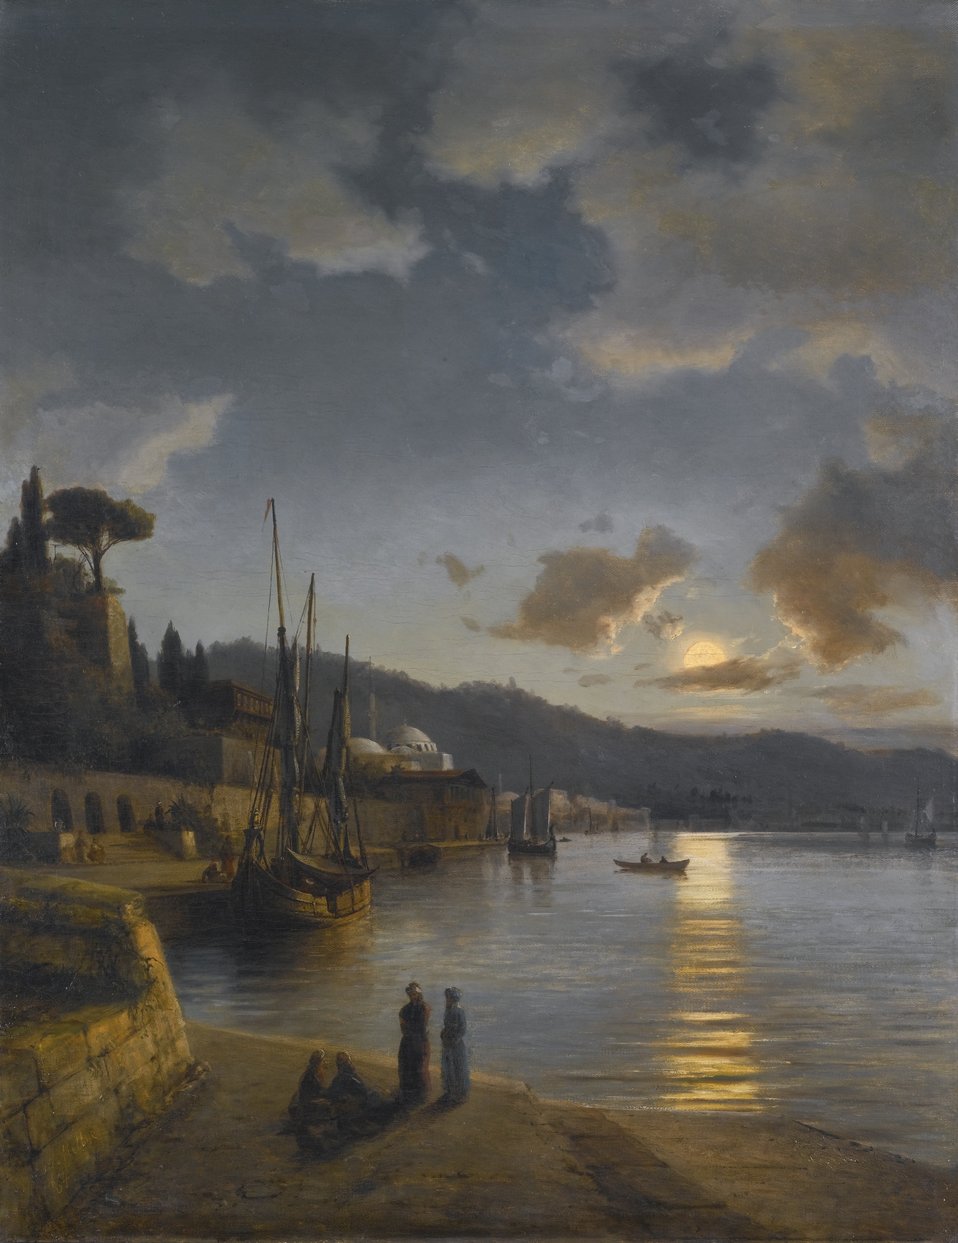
Anton Melbye - En tyrkisk havn i måneskin (1864)